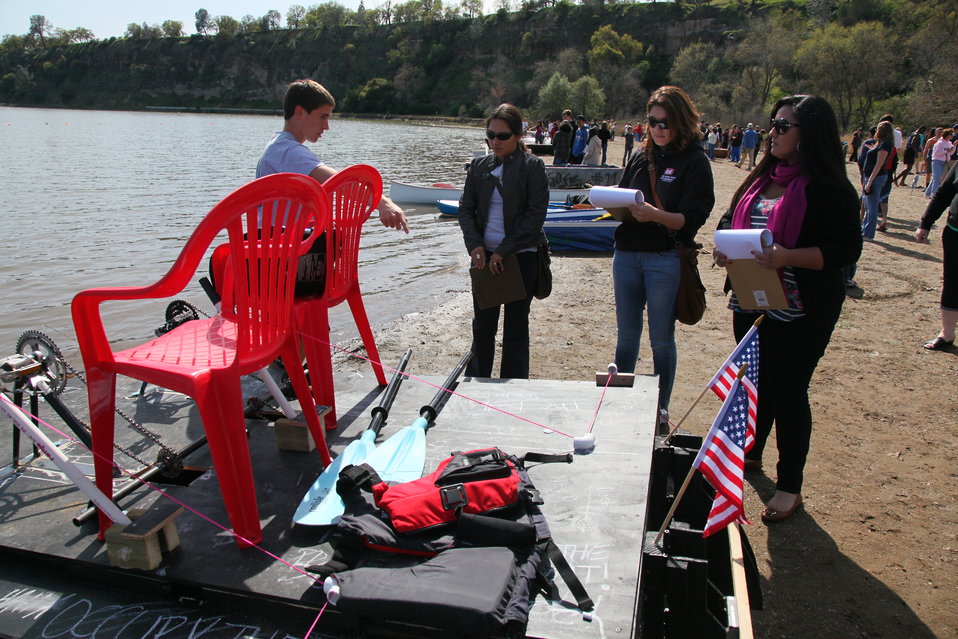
Judging boat regatta entrants for design and construction

(From right to left) Arianna Raymundo, Zeffy Ruvalcaba and Fiorella Fuentes of the U.S. Army Corps of Engineers Sacramento District listen to a student describe his boat at the 5th Annual Folsom High School boat regatta competition at Lake Natoma in Folsom, Calif., March 23, 2012. The three district employees served as judges during the event, checking the students’ designs and construction. Following the on-shore judging, the boats were put to the test on the cold waters of Lake Natoma.